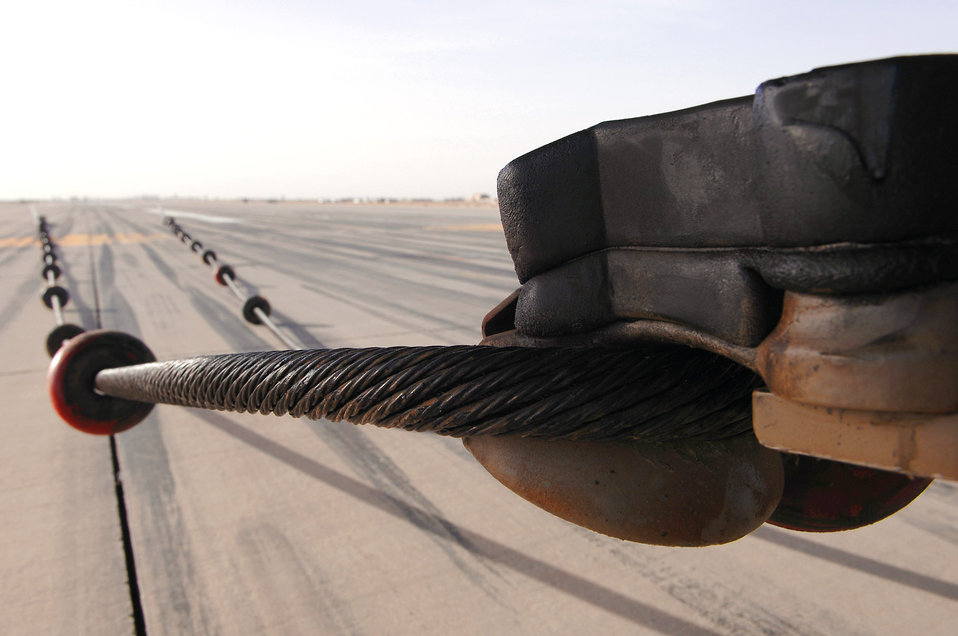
Braking action

An F-16 Fighting Falcon waits to be disconnected from an emergency arresting barrier system cable after passing a certification test of the system March 16 at Balad Air Base, Iraq. The cable system, which is used to bring fighter aircraft to a smooth halt during emergency landings, stretched out about 400 feet before the aircraft came to a complete stop.